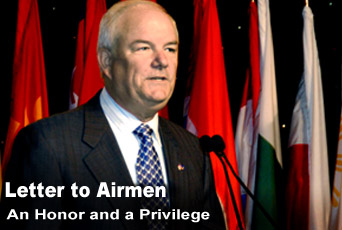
Letter to Airmen

In his farewell Letter to Airmen,Secretary of the Air Force Michael W. Wynne salutes Airmen for their dedication and commitment.